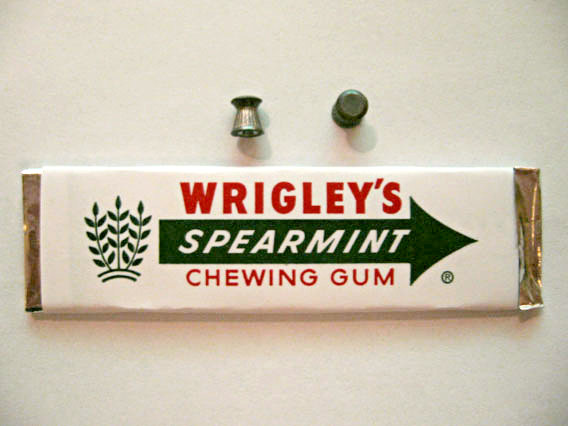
.177 cal air gun ammunition.